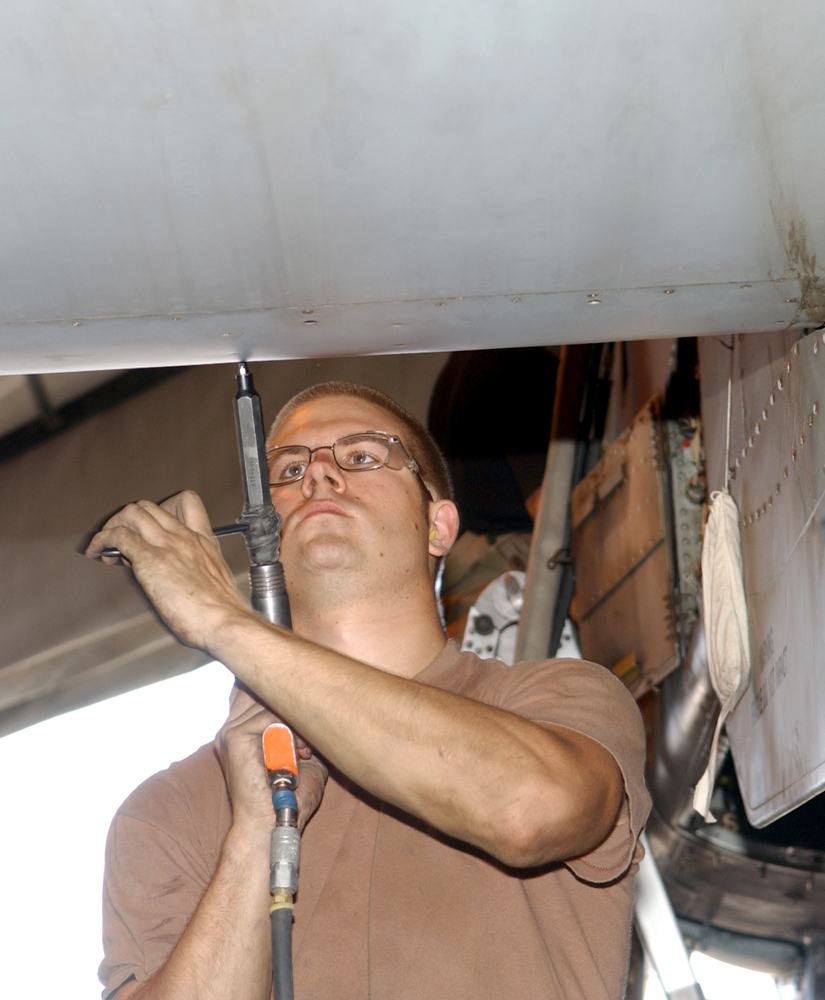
BAGRAM AIR BASE, Afghanistan -- Airman 1st Class Nicholas Burris removes slat panels from an A-10 Thunderbolt II wing. Each A-10 here is taken apart after 400 flying hours so maintainers can perform preventative maintenance. Airman Burris is assigned to the 355th Expeditionary Aircraft Maintenance Squadron here.